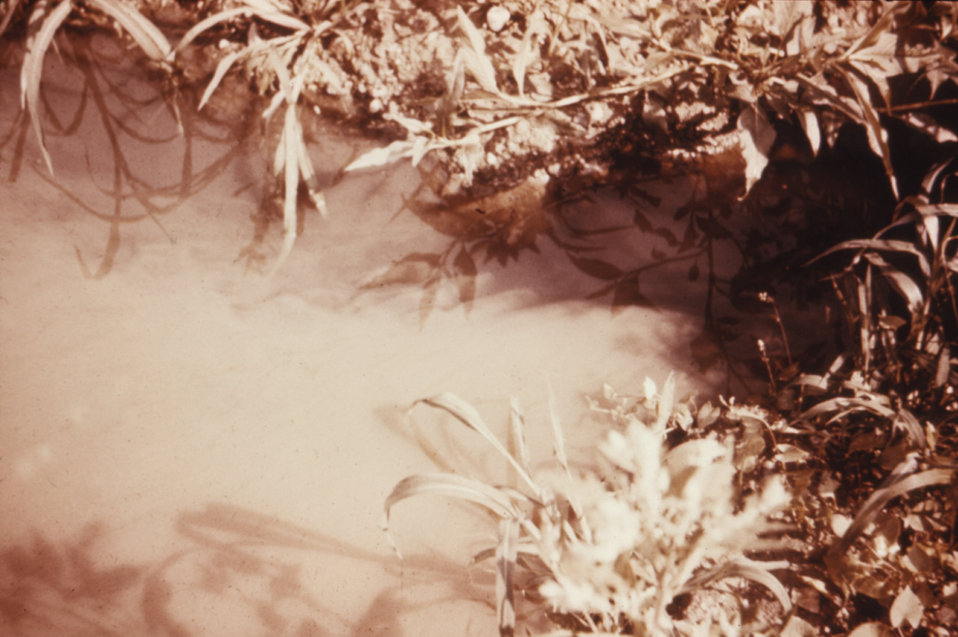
This was part of a series used to familiarize public health inspectors with sanitation conditions in migrant worker camps.